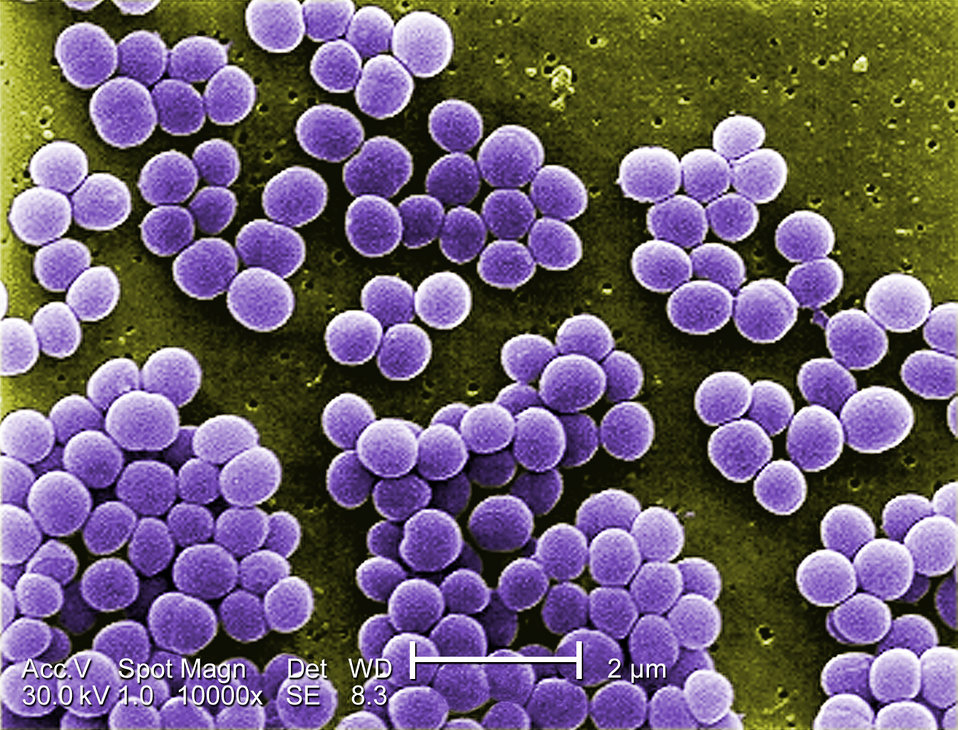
Under a high magnification of 10,000x, this scanning electron micrograph (SEM) shows a strain of Staphylococcus aureus bacteria taken from a vancomycin intermediate resistant culture (VISA).